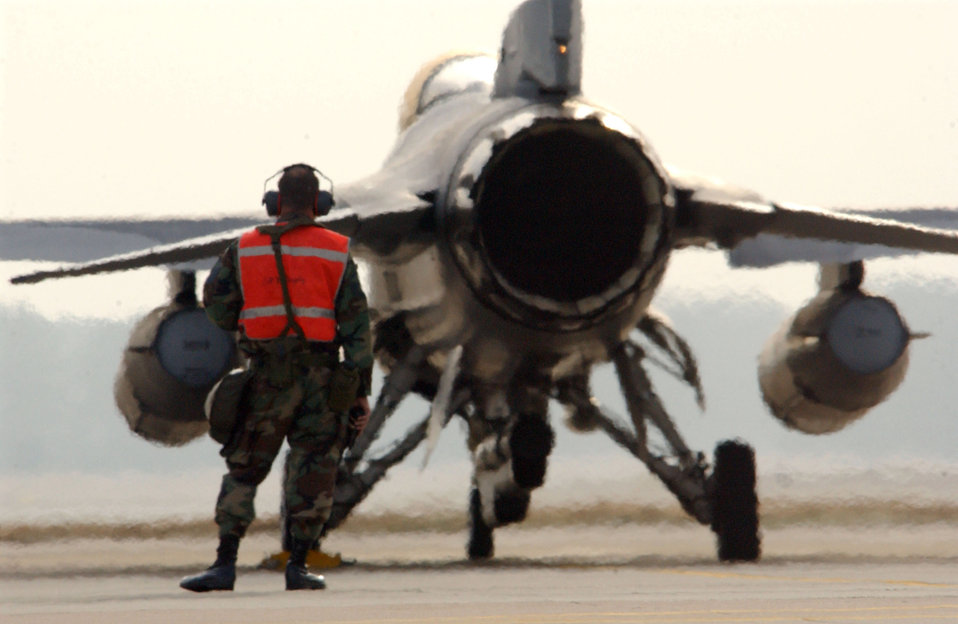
Sea lion

SHAW AIR FORCE BASE, S.C (AFPN) -- Master Sgt. Tracey Shook prepares to launch an F-16 Fighting Falcon on a sortie in support of the Sea Lion 06-07 exercise here. Sergeant Shook is with the 77th Aircraft Maintenance Unit.